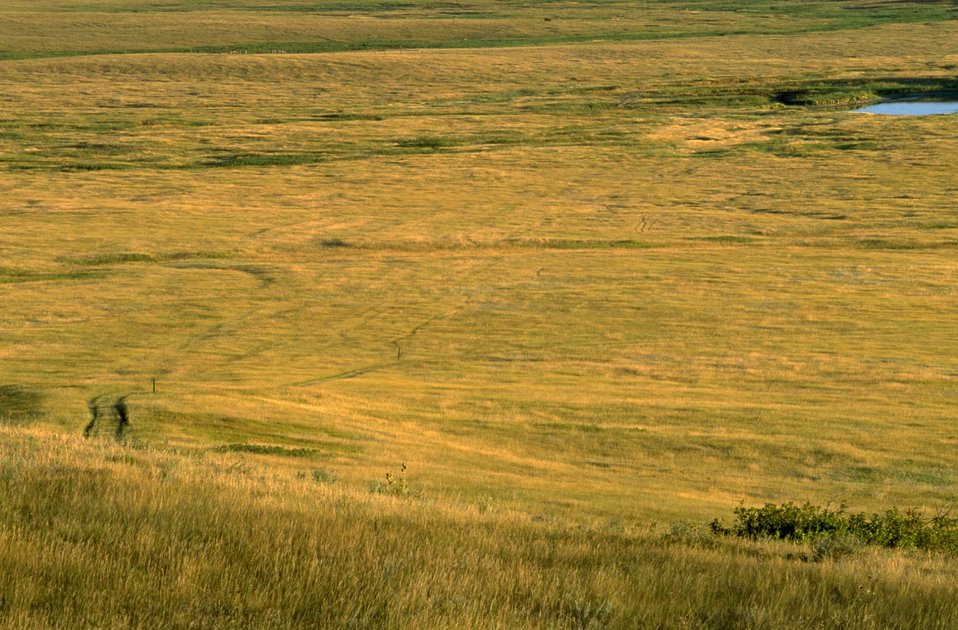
Centennial Trail north end of Fort Meade